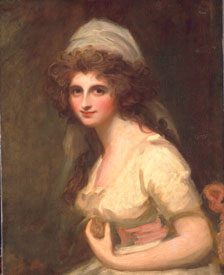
George Romney - Emma Hart, later Lady Hamilton, in a White Turban